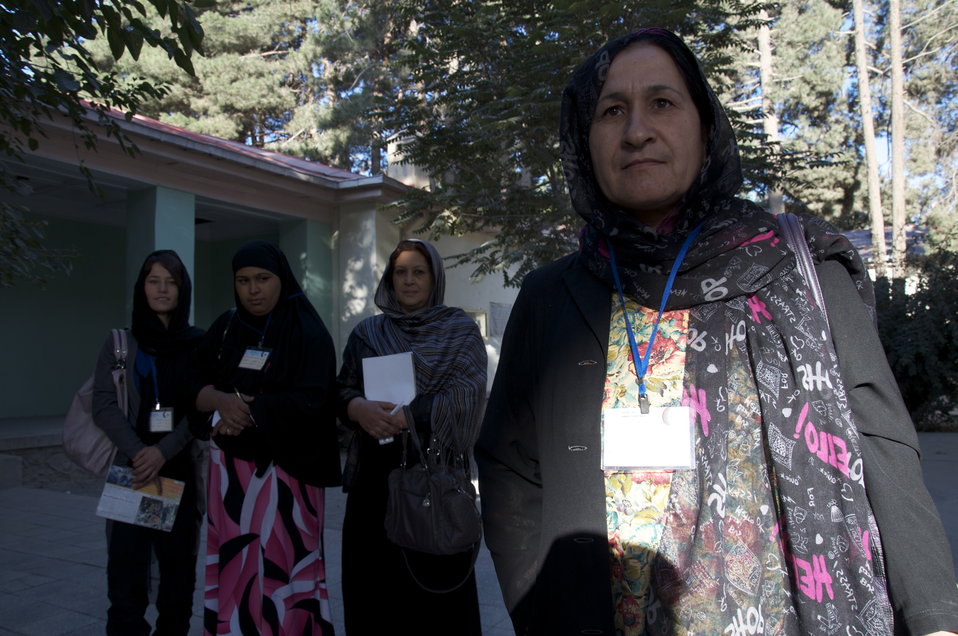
Female Election Observers